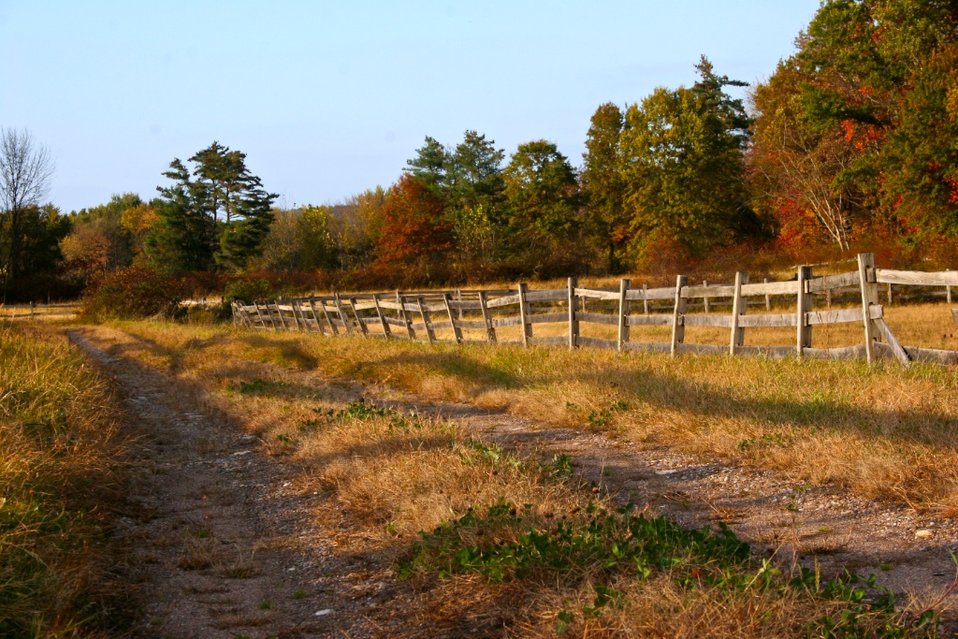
Photo of the Week: Fenced Pathway, Hadley, MA

A pathway within the Fort River Division of the Silvio O. Conte National Fish and Wildlife Refuge in Hadley, MA.

Credit: James Weliver/USFWS

Original: www.flickr.com/photos/usfwsnortheast/4049455675/